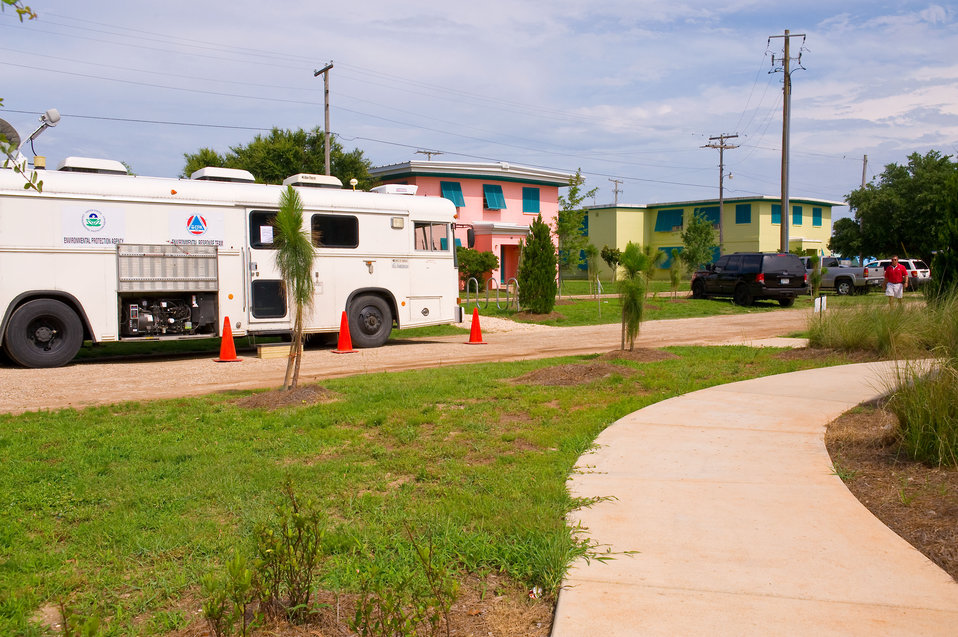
June 3, Taga bus monitors air in Dauphin Island, Ala